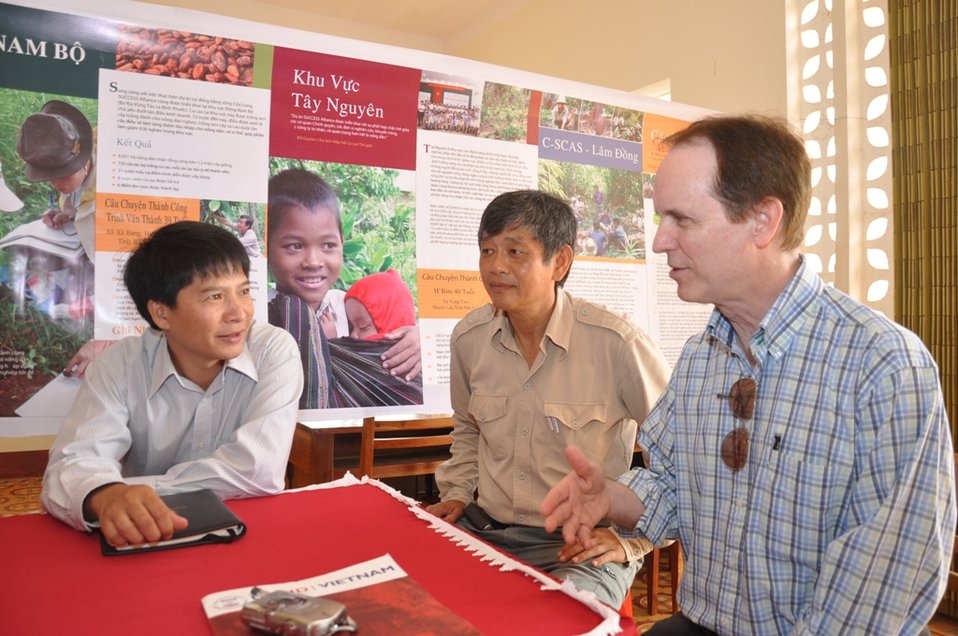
USAID promotes sustainable cocoa farming in rural communities of central Vietnam.

USAID Mission Director Francis Donovan meets with cocoa farming associations in rural Vietnam.